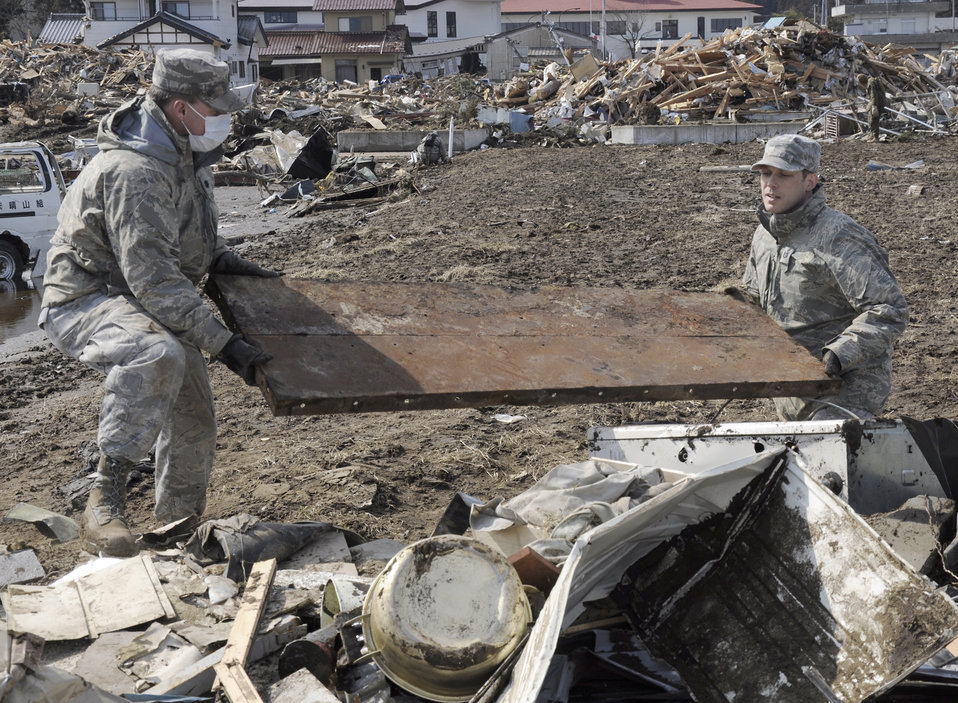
Airmen help with tsunami cleanup

Lt. Col. Eric Winton (left) and Tech. Sgt. Gregory Bird carry debris across a tsunami-struck area March 29, 2011, in Noda Mura, Japan. Winton is assigned to the 373rd Intelligence Group and Bird is with the 35th Maintenance Group.